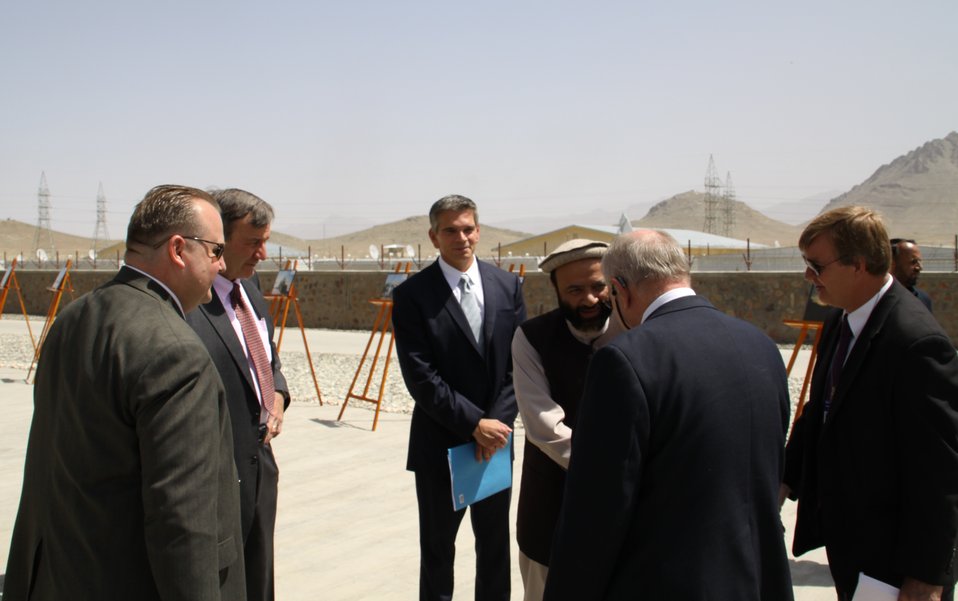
105 MW Tarakhil Power Plant Handover